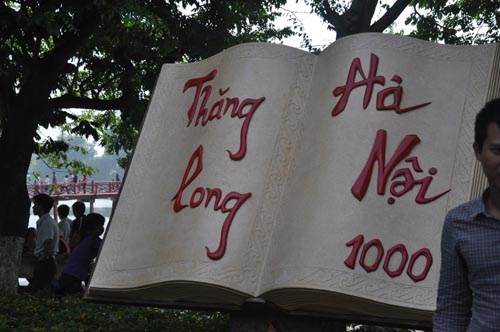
Hanoi celebrates 1,000 years as capital of Vietnam.